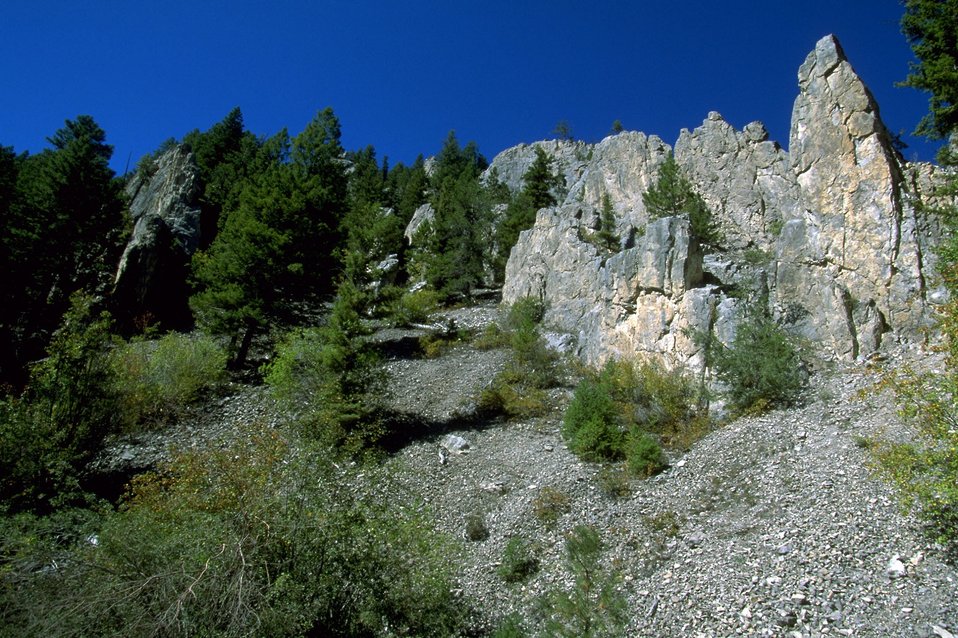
Rattler Gulch-Limestone Cliffs ACEC (area of critical environmental concern)